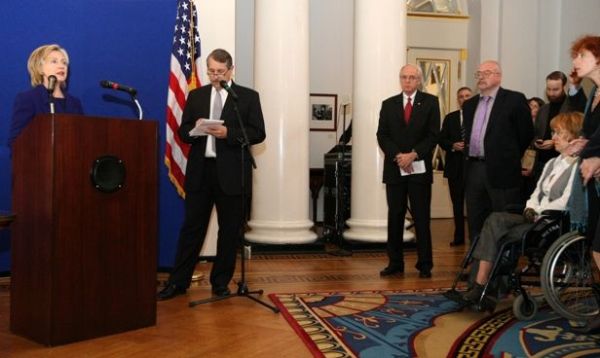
Secretary Clinton at Civil Socanswering student question at the Moscow State University Meeting

U.S. Secretary of State Hillary Rodham Clinton gives remarks at the Civil Society Meeting at the U.S. Ambassador's residence in Moscow, Russia, October 13, 2009.